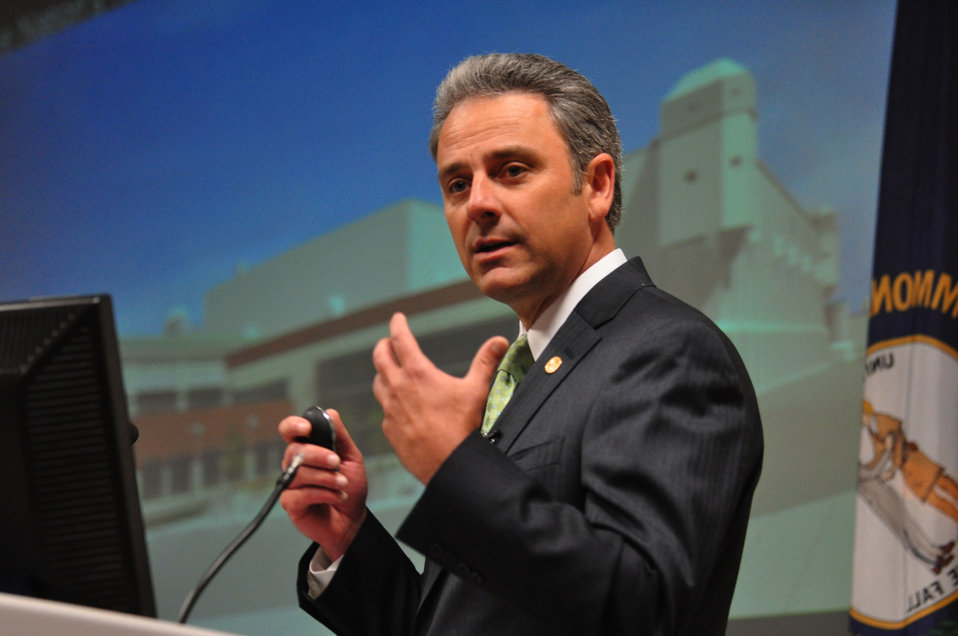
John Eschenberg NNSA Tennessee Valley Corridor Summit Oak Ridge

13-062 DOE photo Lynn Freeny 5-29-2013 Oak Ridge Tennessee